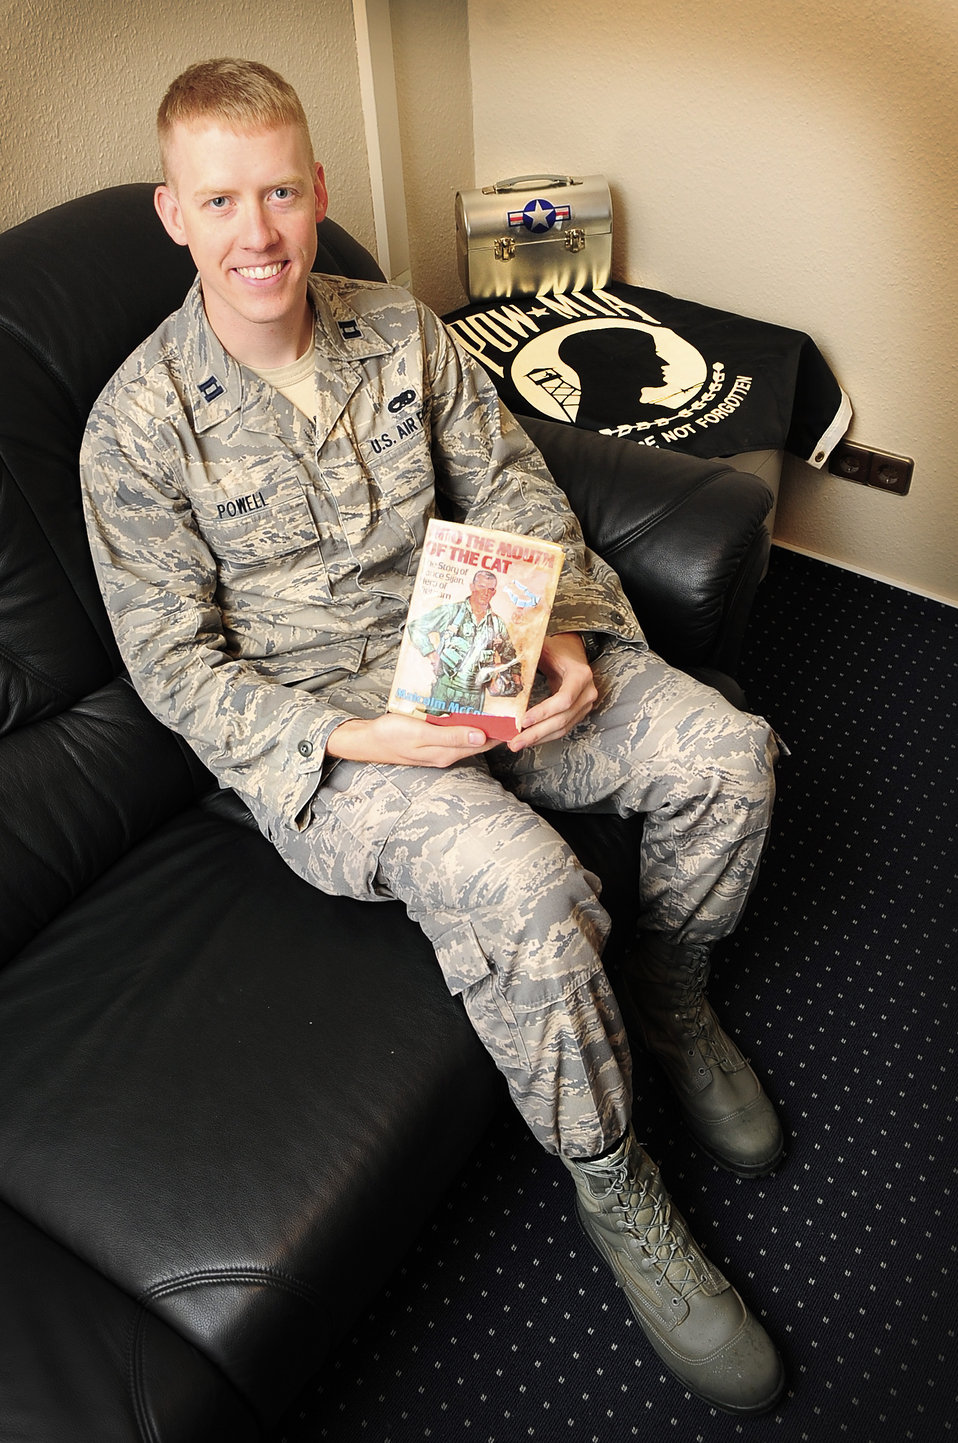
The book that started it all

Capt. Jason Powell, 435th Contingency Response Group operations officer, received a first-edition copy of